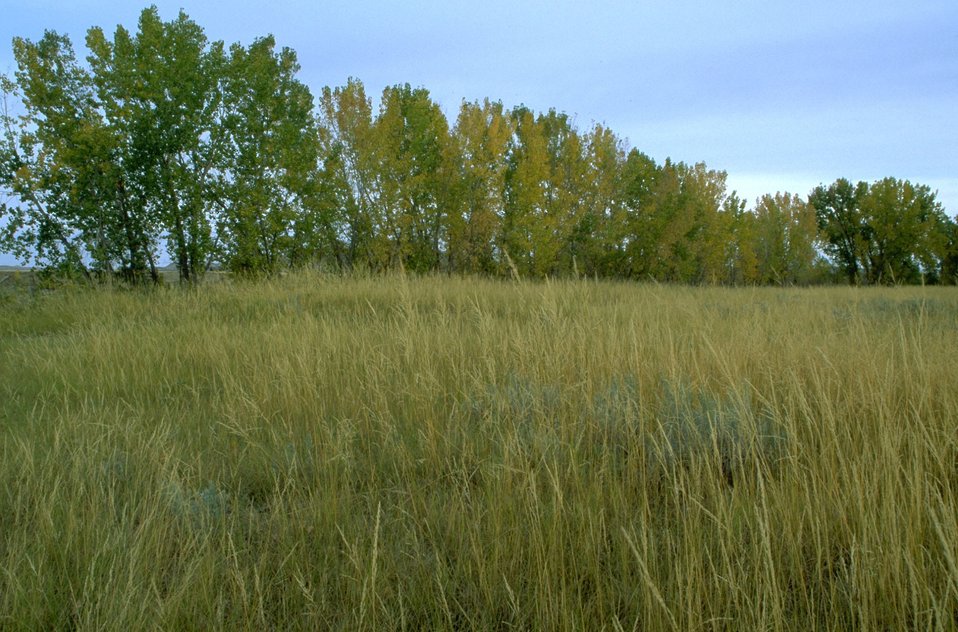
Tall grass and cottonwoods along the Yellowstone River